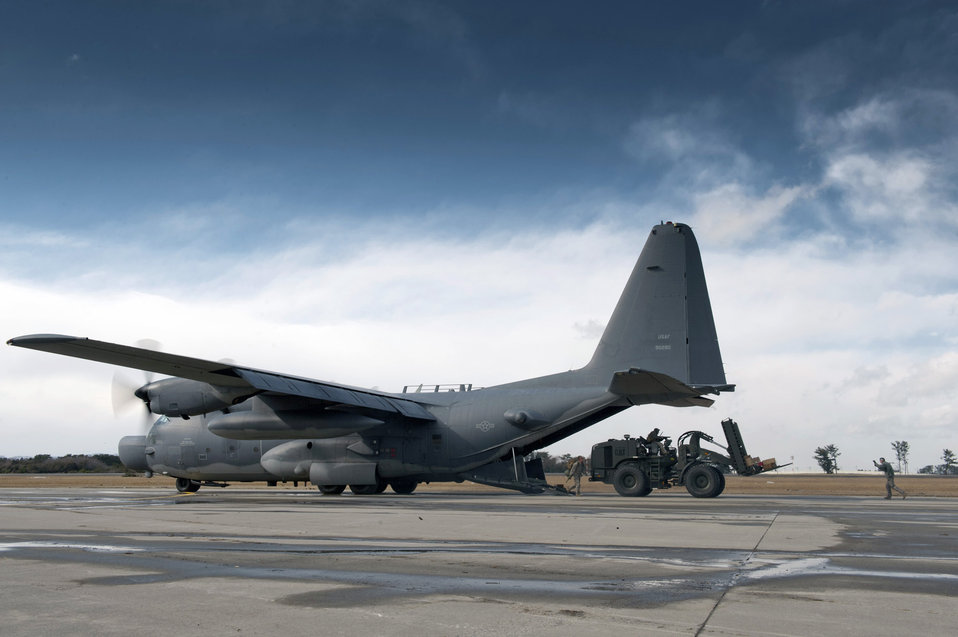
First fixed-wing aircraft since quake lands at Sendai Airport

Airmen unload supplies and a forklift from a MC-130H Combat Talon II, at Sendai Airport, Japan on March 16, 2011. This is the first fixed-wing aircraft to land at the airport since an earthquake and tsunami crippled much of the Japanese eastern seaboard March 11. The opening of this runway to fixed-wing aircraft by the 320th Special Tactics Squadron and Japanese emergency management organizations provides a critical means of transporting fuel, equipment, food and other supplies to areas affected by the earthquake and tsunami.